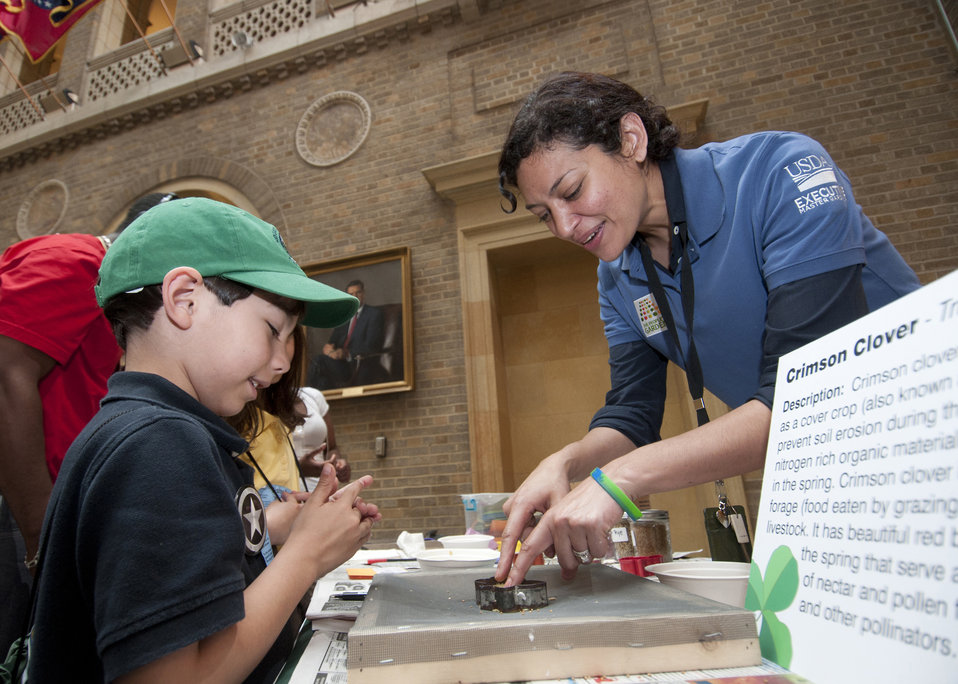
The U. S. Department of Agriculture (USDA) held its annual “Take Your Child to Work Day” on the patio of the Whitten Building, in Washington, DC, on Thursday, Apr. 28, 2011. The program is designed to introduce young people to USDA’s wide range of responsibilities and services. Alejandro Espinosa makes seed cards from recycled paper mixed with water and flower seeds at the People’s Garden exhibit at Agriculture’s “Take Your Child to Work Day” event. The seed card is created layering the paper pulp mixture and flower seeds. A cookie cutter is used to create a fun shape for the seed card. This was one of many interactive activities for children to participate in to learn about green garden practices.